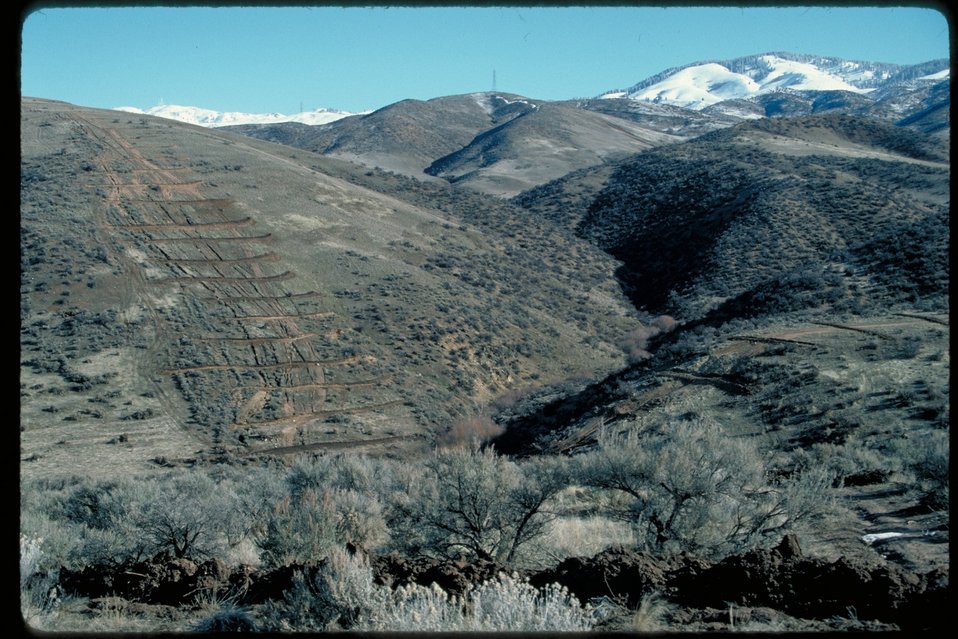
Boise Front Four Rivers Field Office LSRD Lower Snake River District